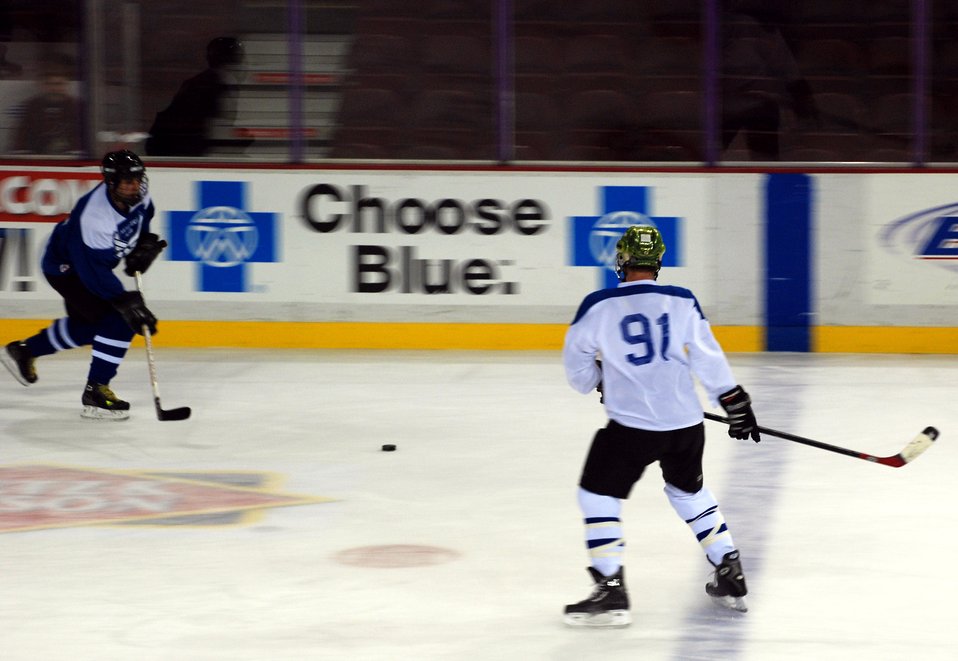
Dover, McGuire raise money for CFC in hockey game

Members of Dover Air Force Base, Del., and McGuire AFB, N.J., hockey teams raised $1,500 for the Combined Federal Campaign in a charity hockey match Jan. 13 in Philadelphia. The game ended with a Dover AFB victory, 9-4. About 300 friends and family members of the two wings attended the charity event.